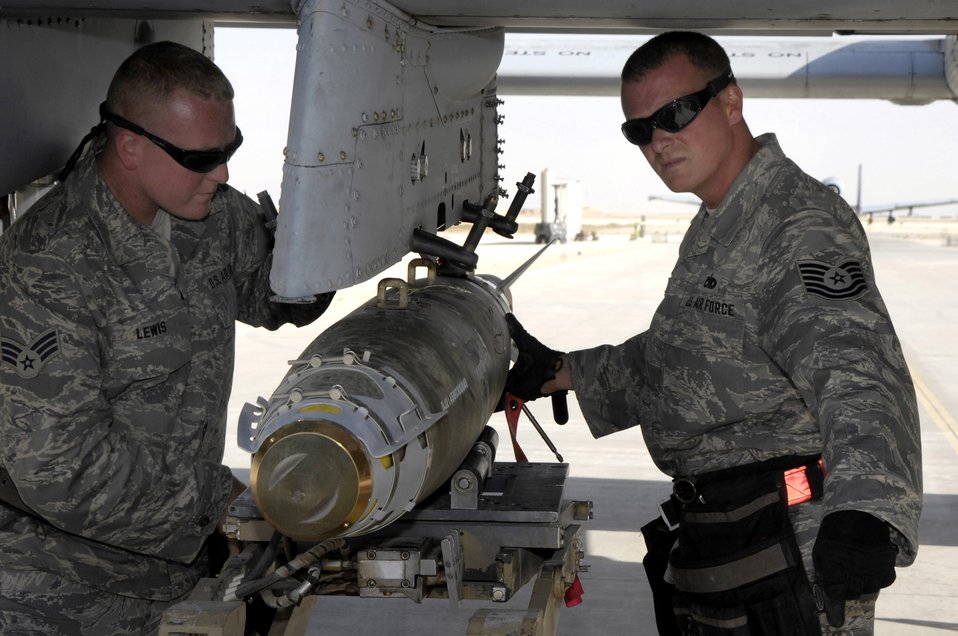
Airpower summary for Oct. 31, 2007

Senior Airman Larry Lewis (left) and Tech. Sgt. David Rey remove a bomb from an A-10 Thunderbolt II. The weapons loaders are deployed to Southwest Asia from the Maryland Air National Guard's 175th Wing. The A-10, with excellent maneuverability and accurate weapons delivery, provide vital close-air support to coalition troops on the ground.